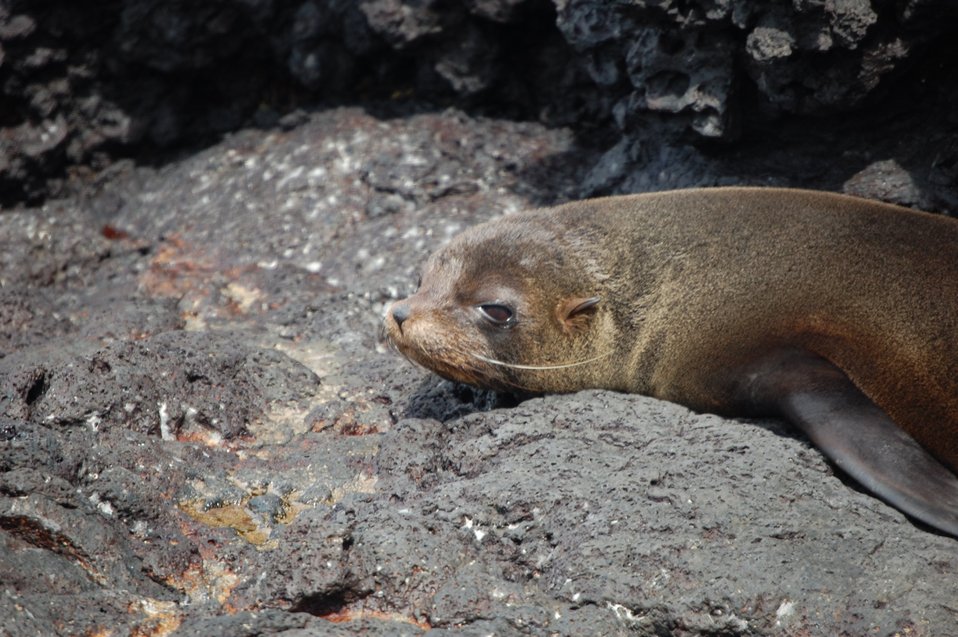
Fur seal.